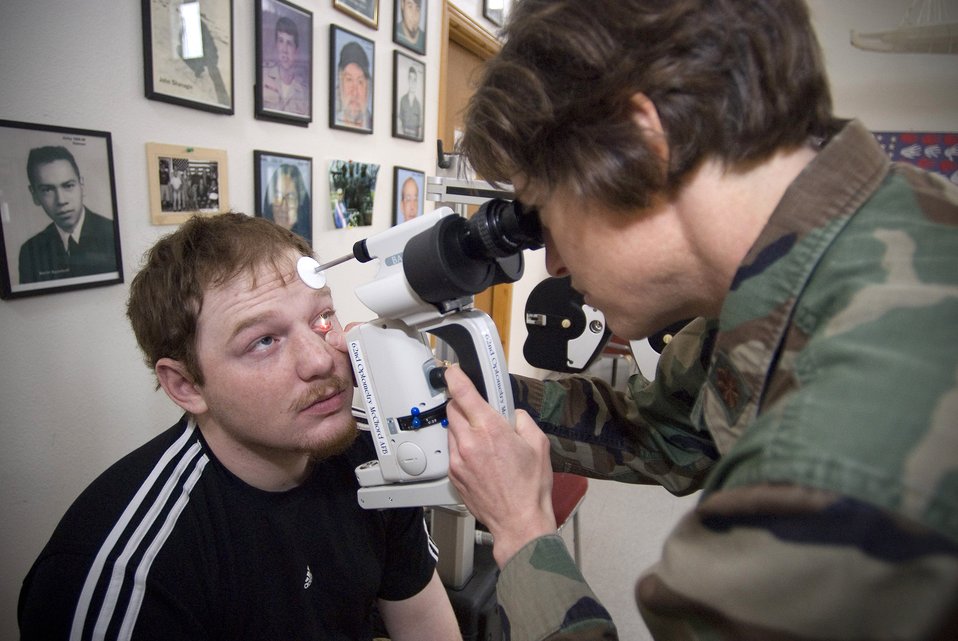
Alaskan villages benefit from joint military medical outreach

Maj. Christine Stabile uses a handheld slit lamp to see the interior and exterior of Scott Detorres' eyes March 6 in Ouzinkie, Alaska. Joint military teams provided medical, dental, optometry, veterinary and mechanical services to six medically underserved island communities as part of Operation Arctic Care 2008, an annual training event sponsored by the Innovative Readiness Training program under the Office of the Assistant Secretary of Defense for Reserve Affairs. Major Stabile is assigned to the 62nd Medical Operations Squadron from McChord Air Force Base, Wash.